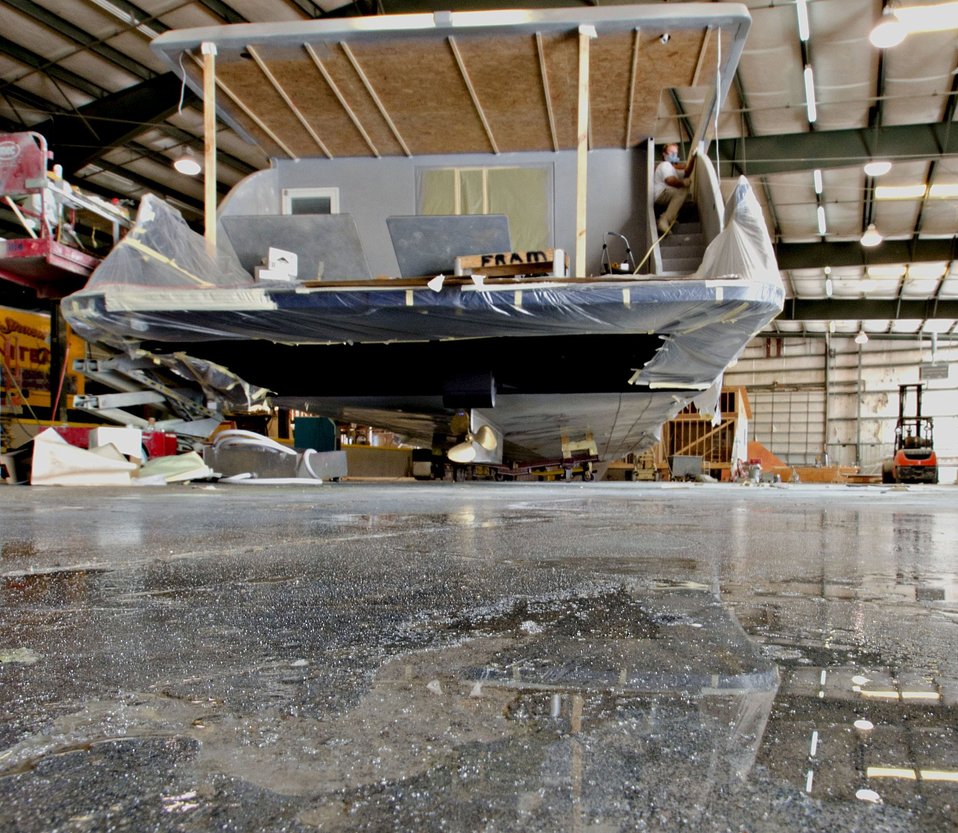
Stardust Industries is using it's expertise in luxury house boats to help retool and redirect Monticello, Kentucky’s houseboat manufacturing industry on Wednesday, July 13, 2011 The houseboat industry has been decimated because of the struggling economy – by using its facilities and manpower to create low-cost housing that is energy efficient. Rural Development obligated $499,000 in Rural Business Enterprise Grant funds to support this unique endeavor. Up until a few years ago, there were several successful houseboat manufacturers in the four-county area surrounding the city of Somerset. Most have now ceased operation or drastically reduced output, which has led to dramatic, long-term job loss. These new energy efficient homes will be constructed in redesigned, refitted houseboat factories using local workers that have been retrained.